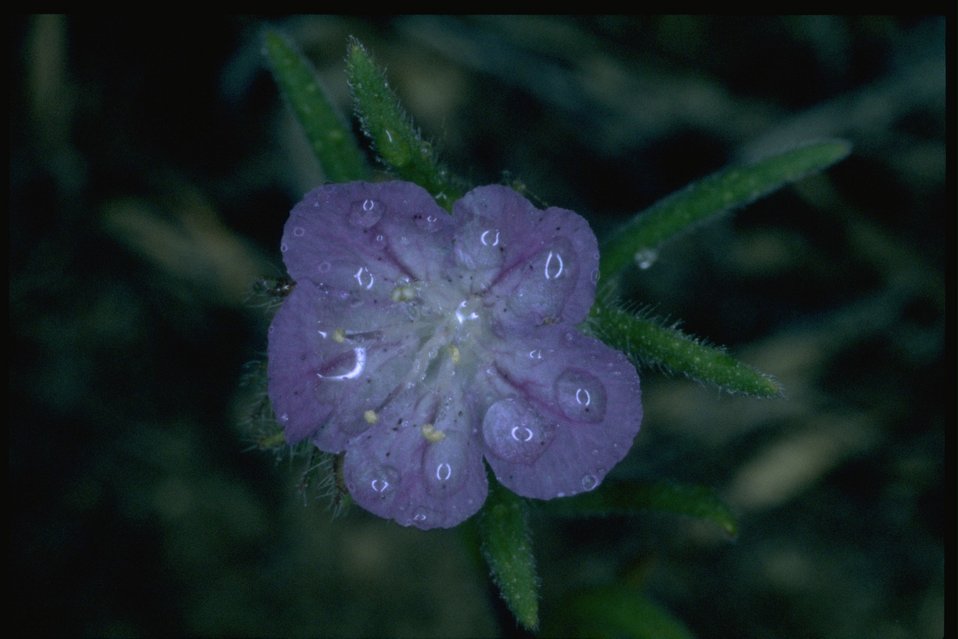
Closeup shot of Phacelia wildflower.